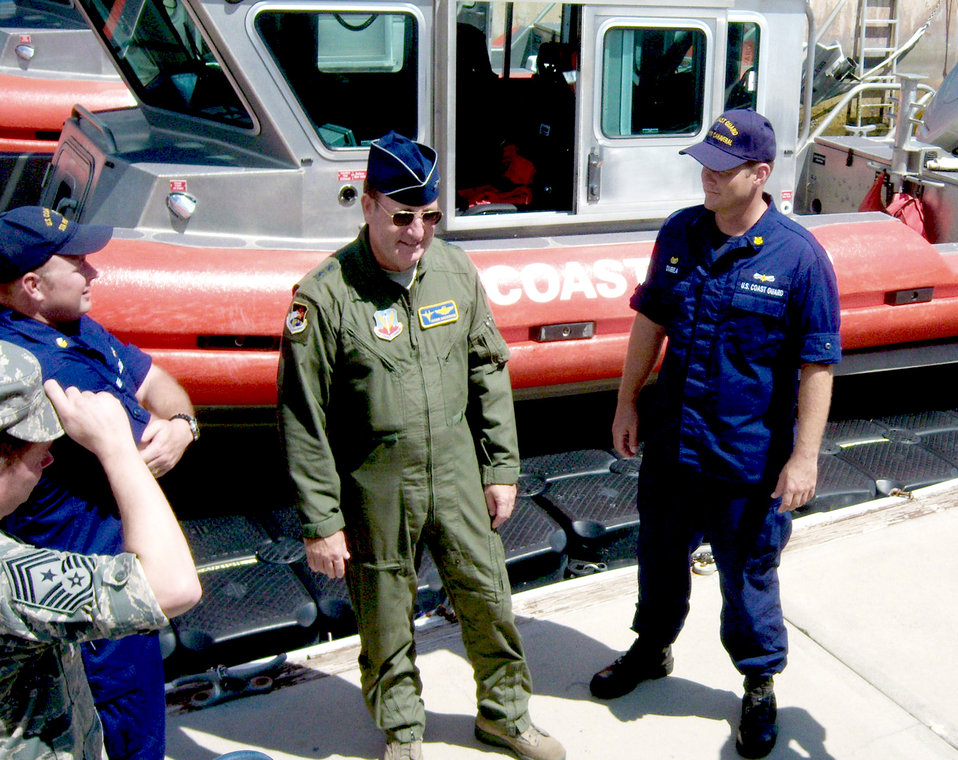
AF general thanks Coast Guard for continuous shuttle support

Maj. Gen. Hank Morrow and Chief Master Sgt. David Zoromski visit with Coast Guard Chief Warrant Officer 3 James A. Dubea and Coast Guard Petty Officer 1st Class Marshall Riff. Gen. Morrow visited the Coast Guard Station Port Canaveral, Fla. Aug. 31 to express his thanks to the team for their continued support of the Joint Task Force-Space Transportation System mission. General Morrow is 1st Air Force commander. Chief Warrant Officer Dubea is a commanding officer. Petty Officer Riff is an operations petty officer.